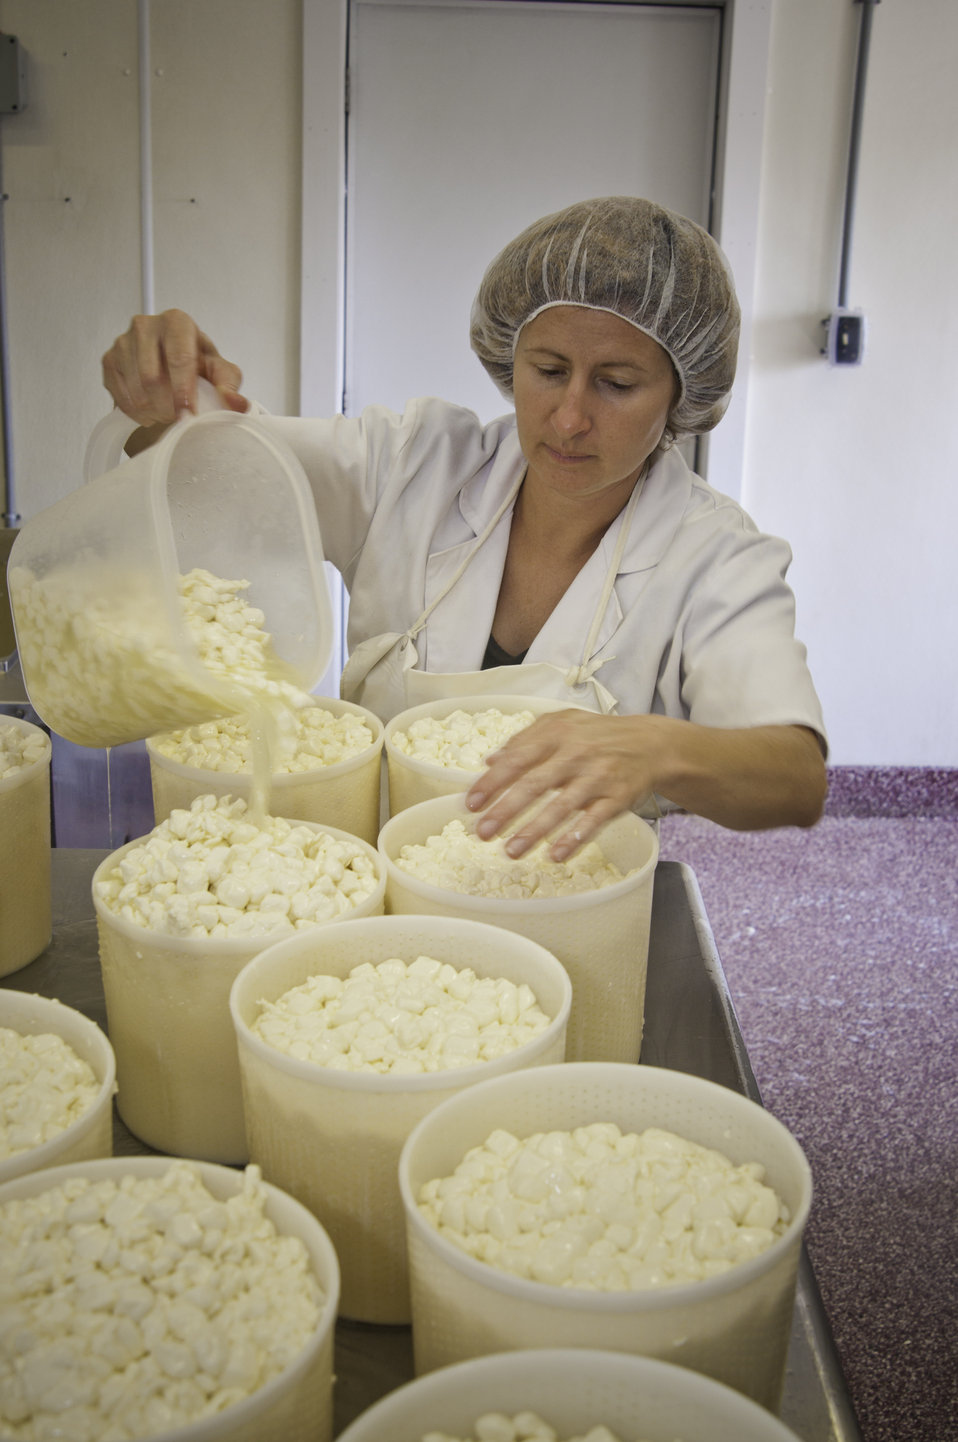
Chapel’s Country Creamery owner Holly Foster in Easton, MD pours milk curd of fresh raw milk after the milk curd has expelled the whey in the cutting process into cheese hoops called the hooping process. The curds drain in the cheese hoops for 24 hours being turned during the process until the whey has drained. Then the cheese is taken to the aging room to cure. The dairy uses fresh raw milk 12-24 hours old. The milk is all-natural and contains no synthetic hormones, antibiotics, or chemical compounds. The 1150 pounds of milk in the vat will be used to make the dairy’s “Bay Blue” Cheese.